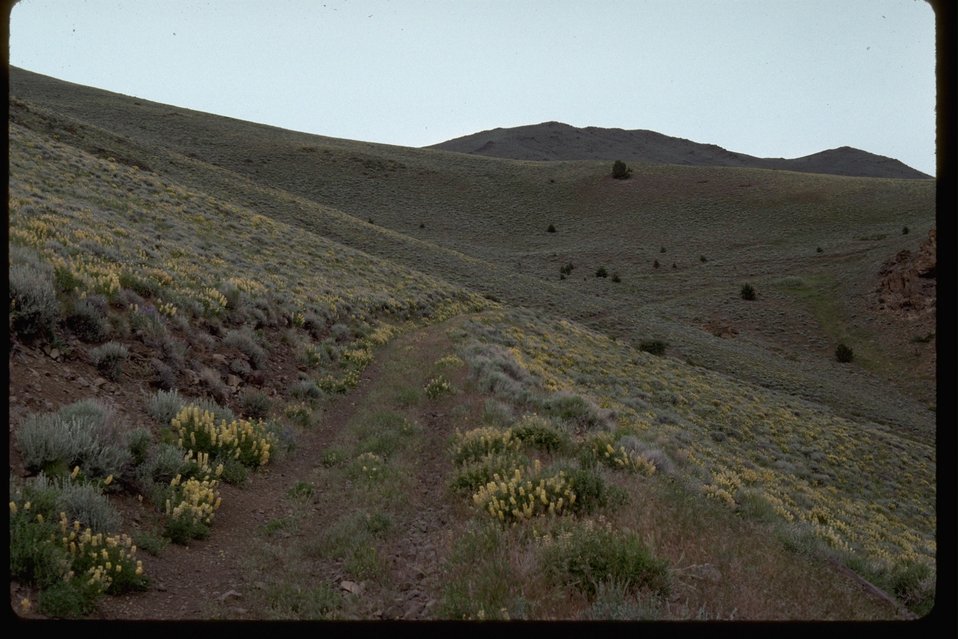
A typical back country road in the South Steens Mountain area.